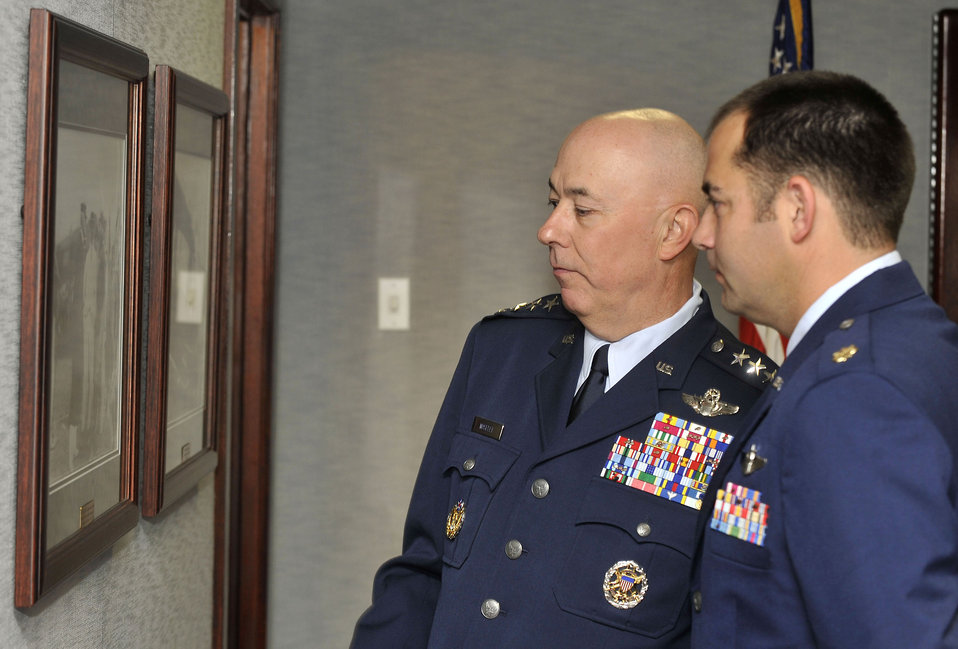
CSAF Retirement Ceremony

Gen. T. Michael Moseley admires historic photographs in the Mitchell Center with his son, Maj. Gregory M. Moseley, moments before General Moseley's retirement ceremony on Bolling Air Force Base, D.C., July 11 General Moseley is the 18th chief of staff. His son is a weapons instructor at Tyndall Air Force Base, Fla.